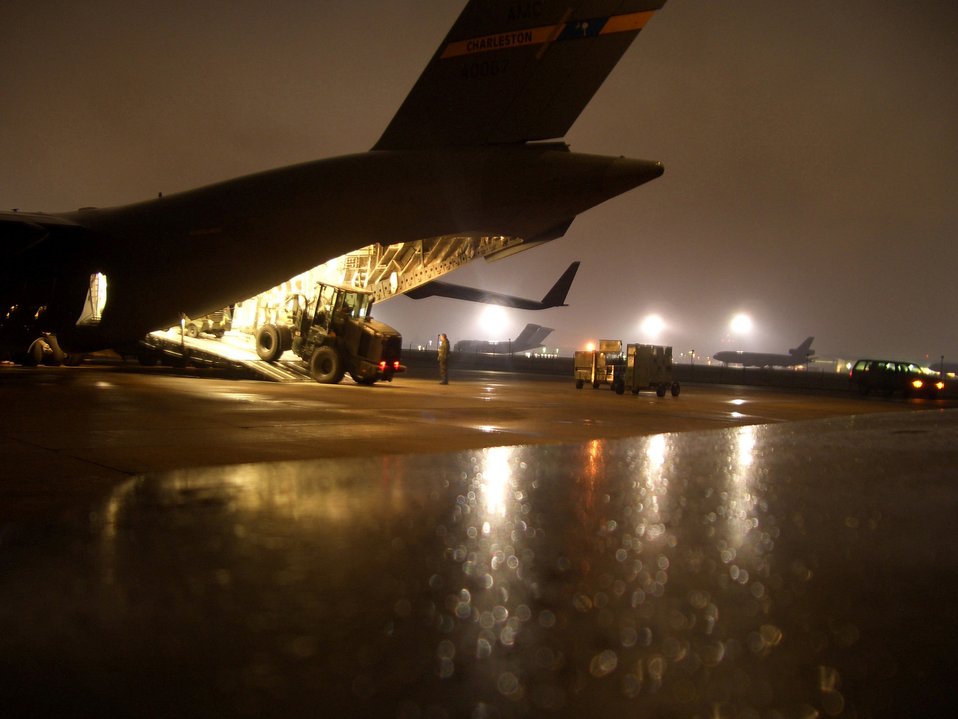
AMC assists earthquake response

MCGUIRE AIR FORCE BASE, N.J. -- Members of the 305th Aerial Port Squadron load a C-17 Globemaster III here. The aircraft, loaded with relief supplies and members of the 621st Contingency Response Wing, left here Oct. 10, bound for Pakistan to support earthquake relief operations. Both Airmen are assigned to the 305th Aerial Port Squadron here.